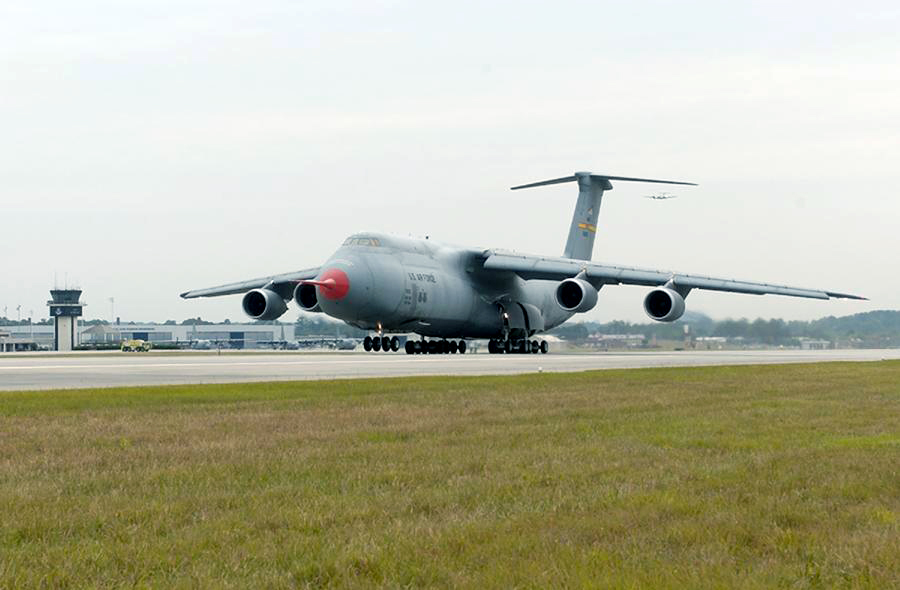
C-5 still going strong after 38 years

A modernized version of the C-5 Galaxy, known as the C-5M, made its maiden flight at Dobbins Air Reserve Base, Ga., on Monday, June 19. Upgrades to the venerable airlifter include new, more powerful engines; a modern cockpit with a digital, all weather flight control system, a new communications suite and enhanced navigation and safety equipment.